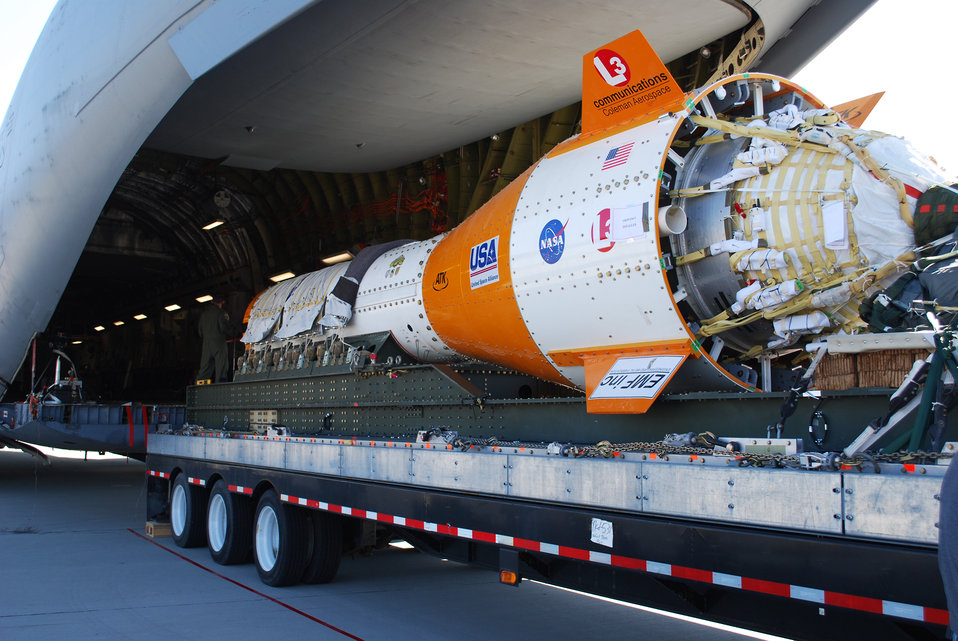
Aircrew breaks C-17 record with heaviest airdrop

A jumbo drop test vehicle is loaded onto a C-17A T-1 April 14, 2010, at Edwards Air Force Base, Calif.